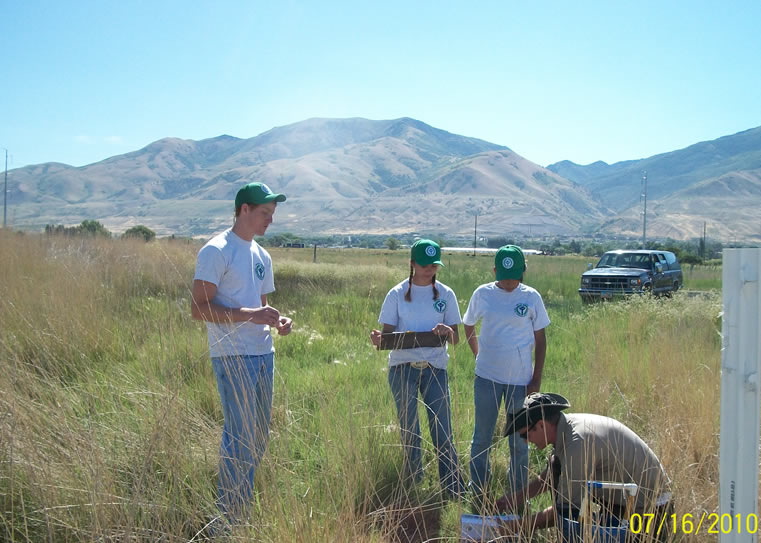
Youth Conservation Corps Crew Collect Data

Youth Conservation Corps assist with research by collecting vegetation data.